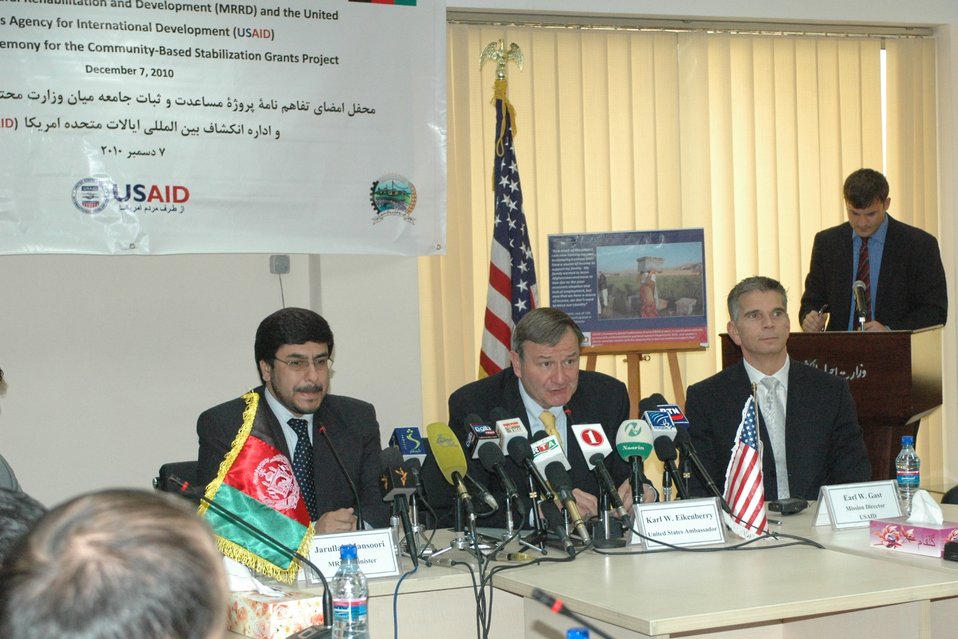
Community Based Stabilization Grants Ceremony, December 7, 2010